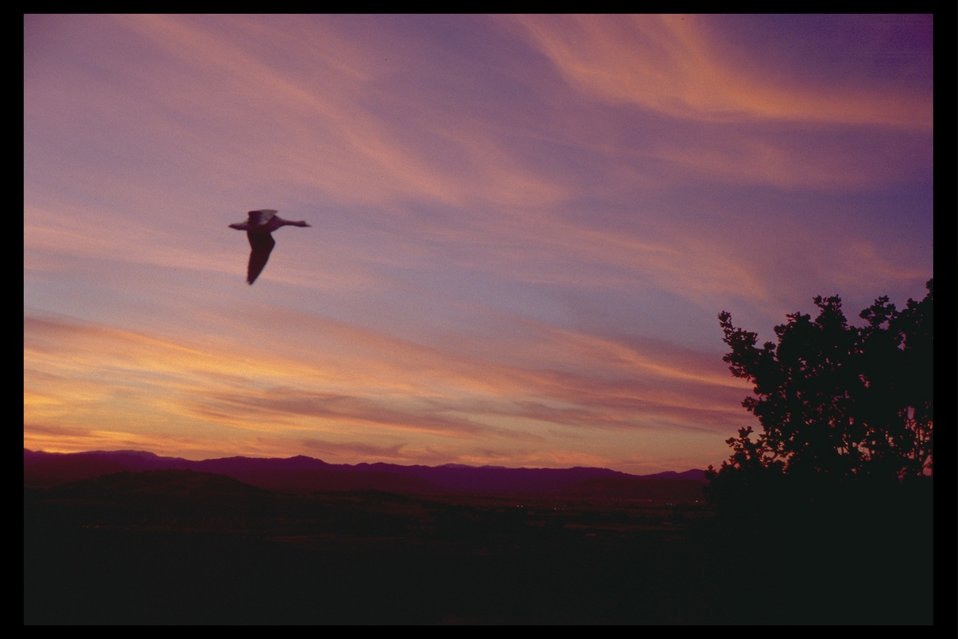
Sunset from Roxy Anne Peak with a goose silhouetted in the sky.